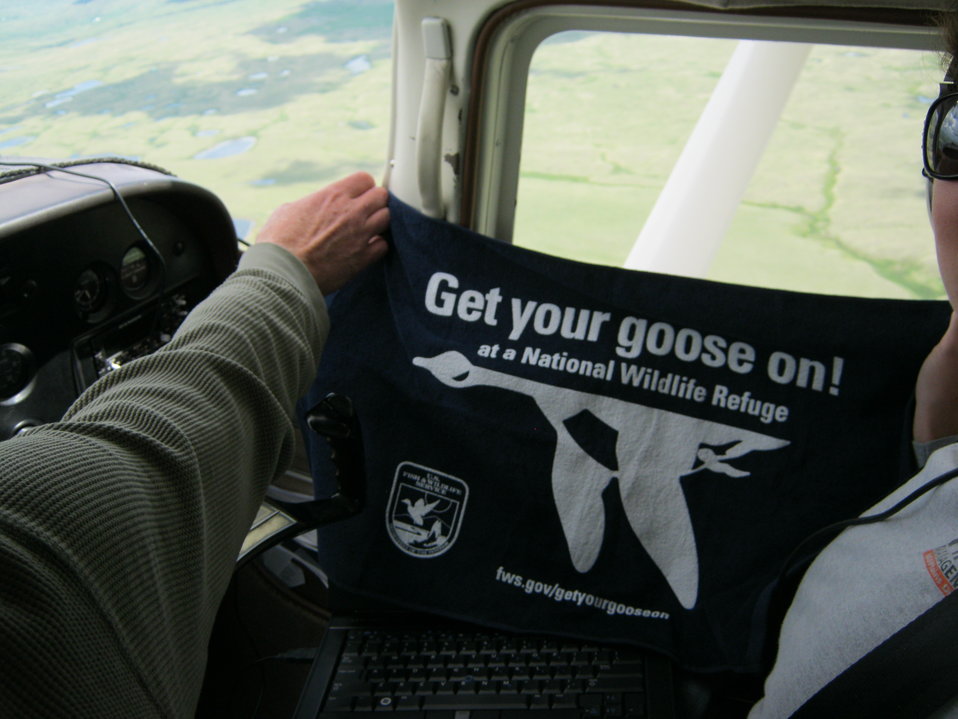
Get Your Goose On!

The goose takes flight at Benton Lake National Wildlife Refuge